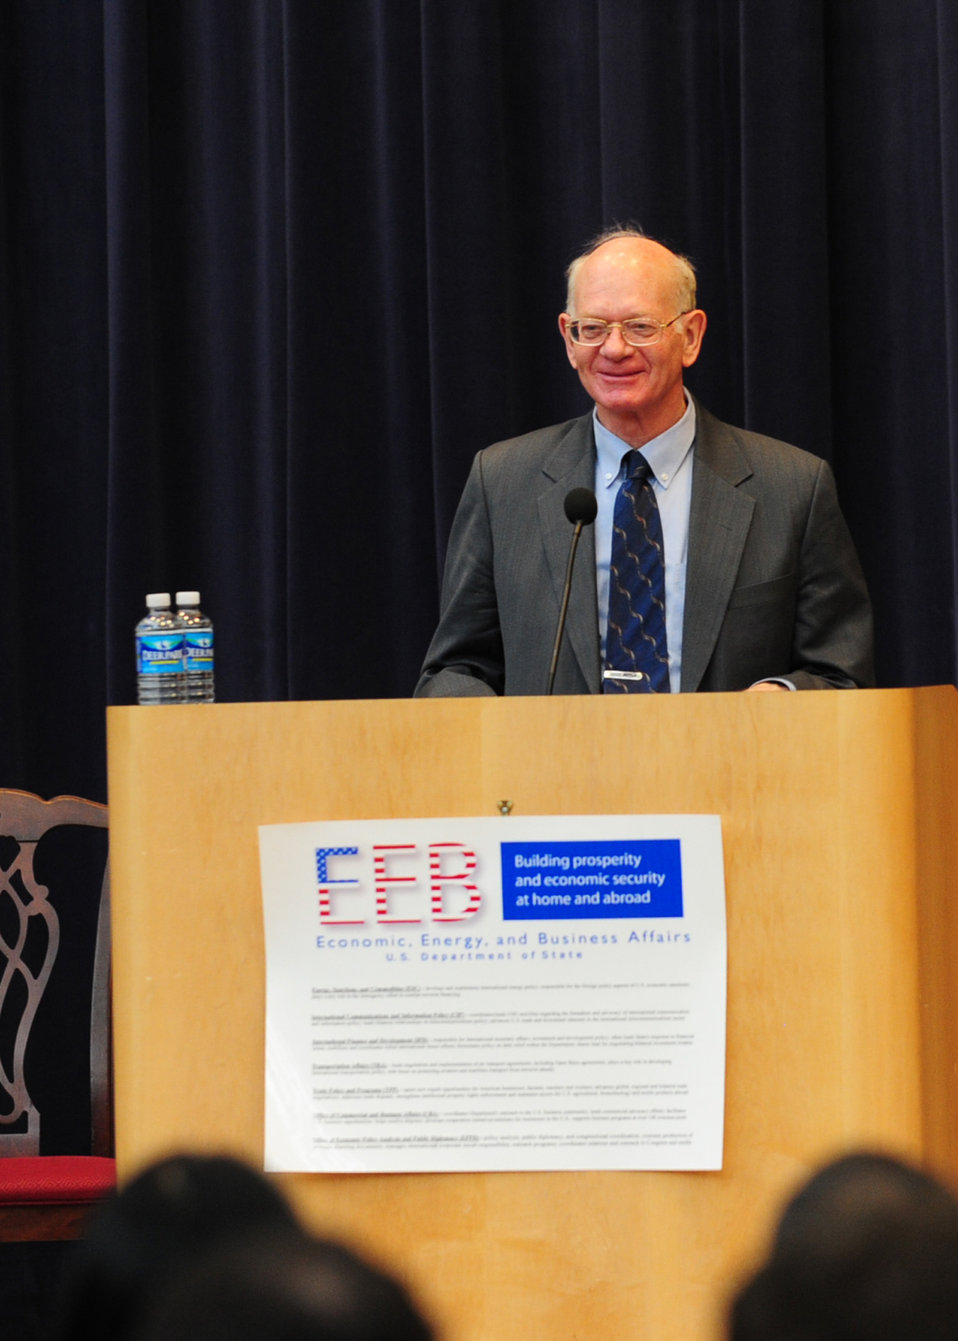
Ambassador Neumann Delivers Remarks at the Economic Leadership Day Ceremony

Ambassador Ronald Neumann delivers remarks at the Economic Leadership Day Ceremony, at the U.S. Department of State in Washington, D.C., on March 29, 2011.